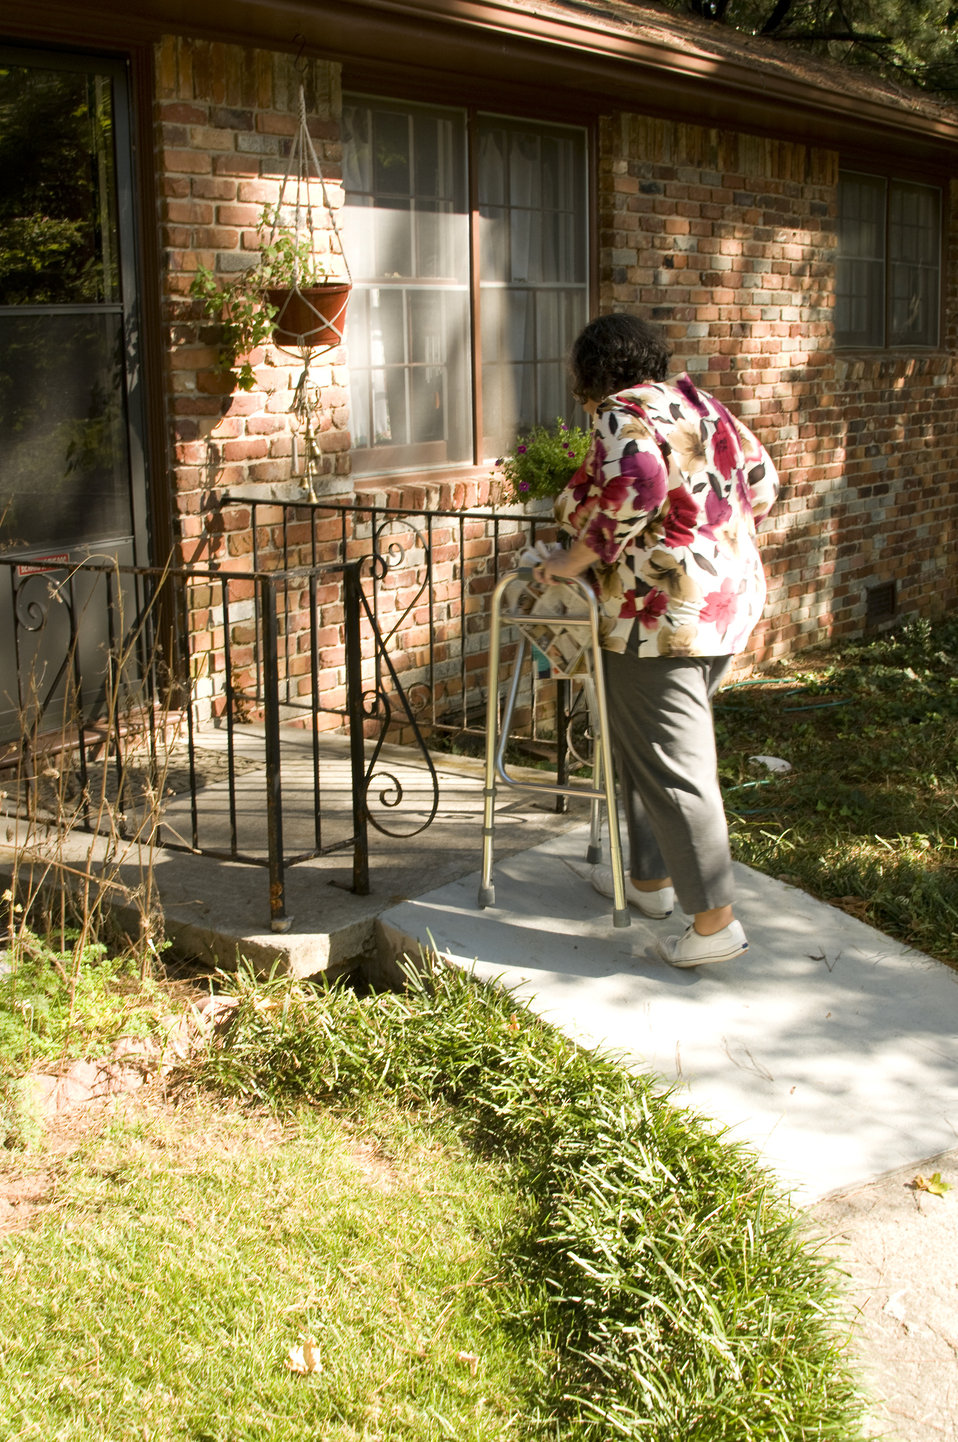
The woman pictured here is a rheumatoid arthritis patient, and is living with this disease, still doing her best to carry on with her day to day activities. With the help of her walker, she was shown retrieving her mail having gathered the mailings form the street-side mailbox. At this point she was headed back to the front door of her Georgian home.